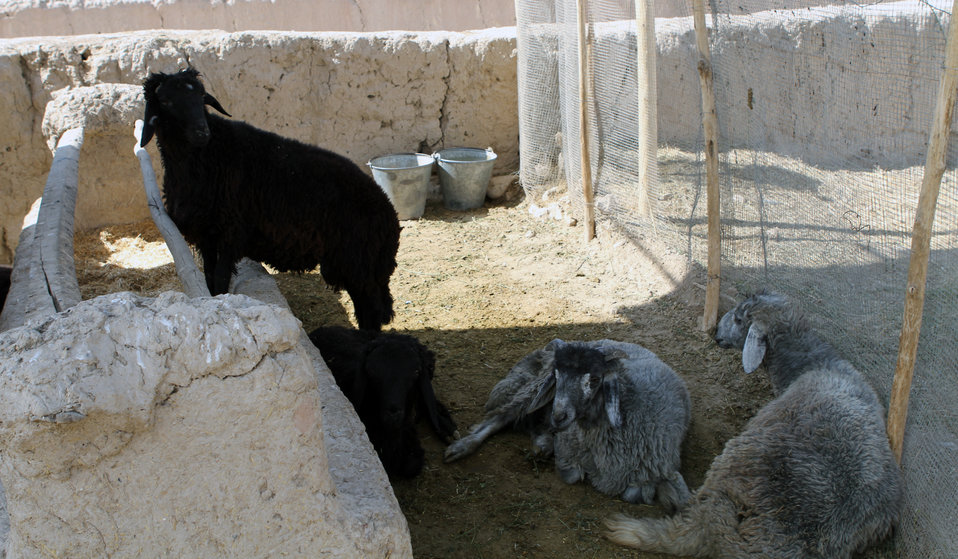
Development of Veterinary...